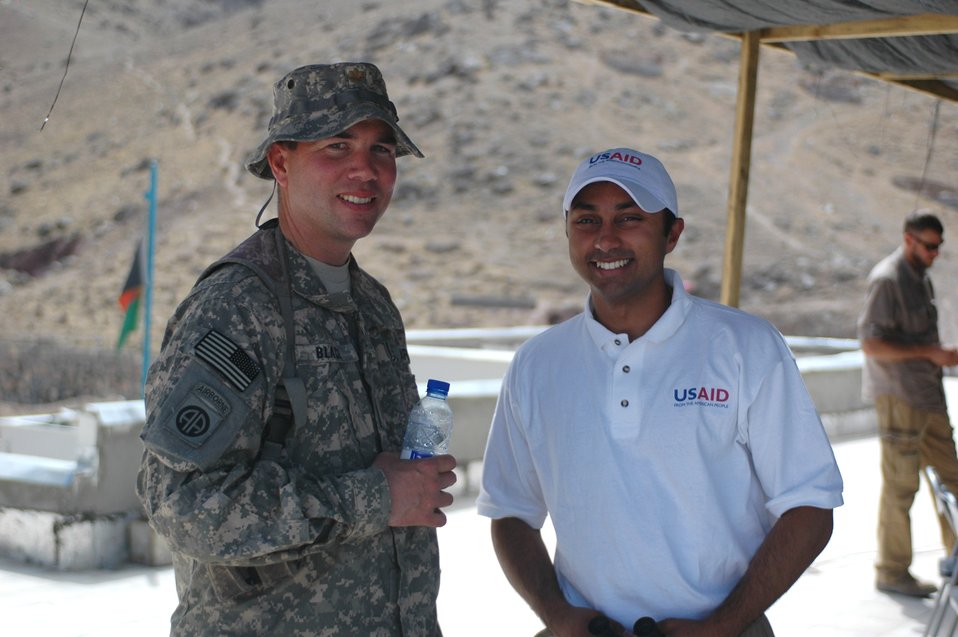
Dr Shah Visits Kandahar April 9, 2010